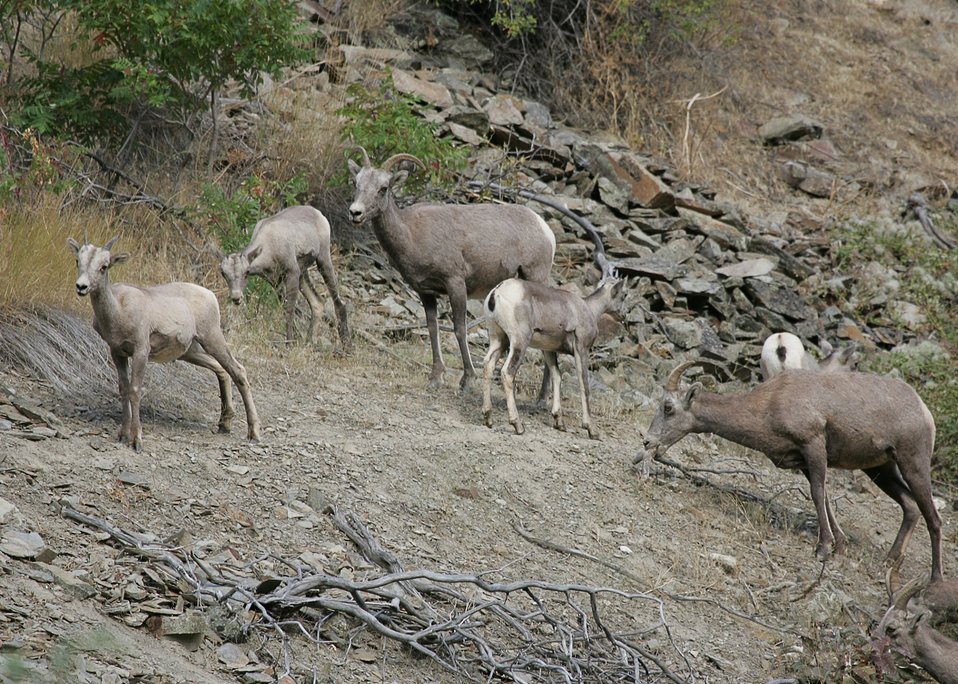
Bighorn sheep in the Connor Creek watershed in eastern Oregon.